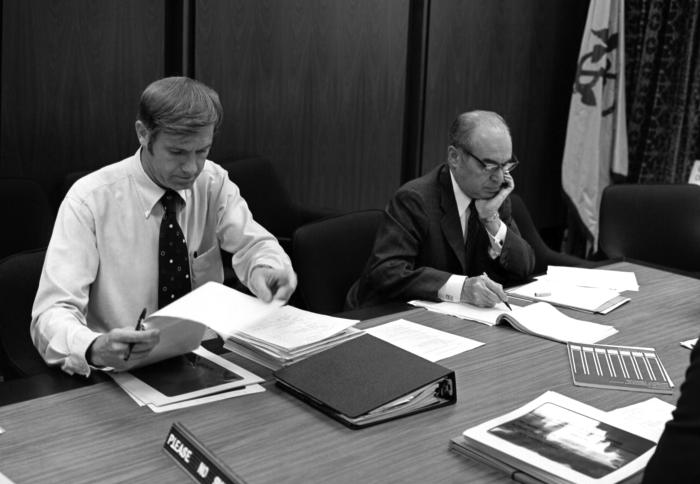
This 1977 photograph depicts former Centers for Disease Control and Prevention Director William H. Foege, M.D., M.P.H. (left) as he was analyzing data with a fellow meeting attendee.